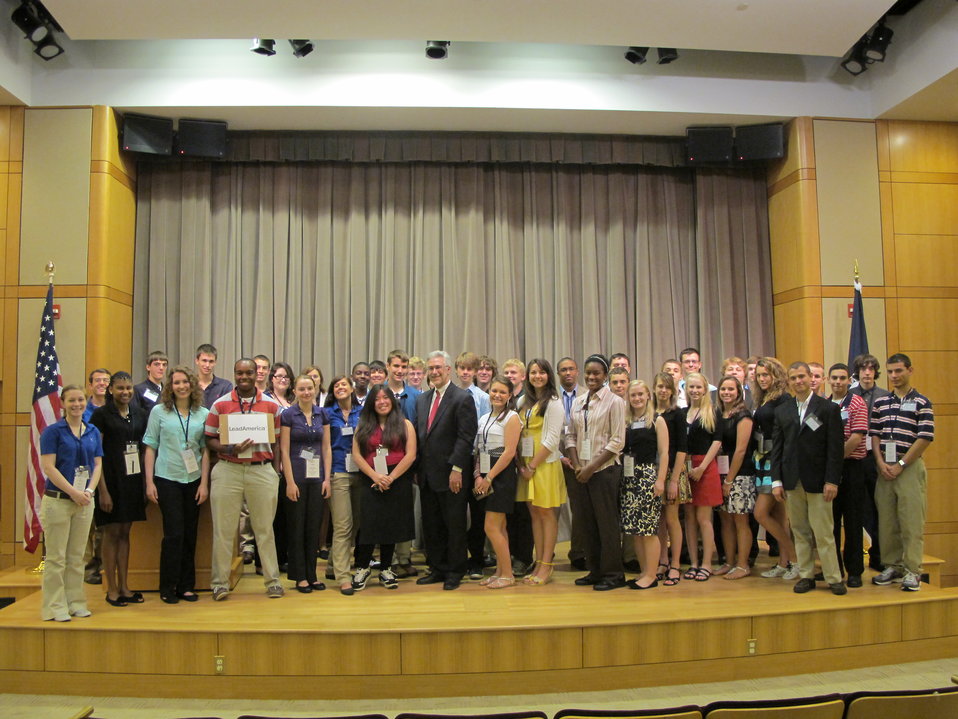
David Bame Meets With Students

David Bame of the Bureau of International Organization Affairs meets with students participating in the LeadAmerica summer program through Georgetown University, at the U.S. Department of State in Washington, D.C., on June 21, 2011.